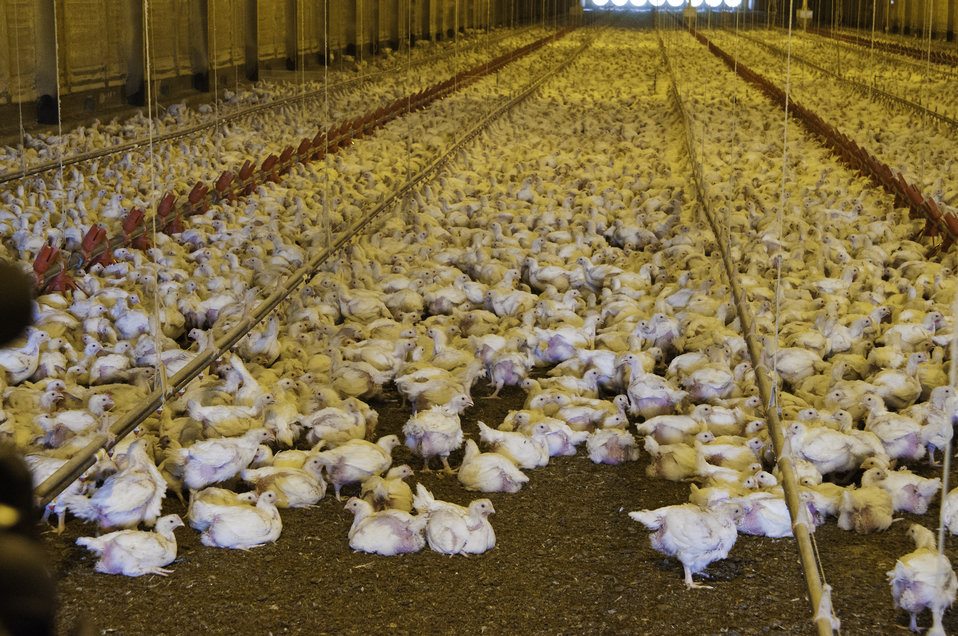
Broiler chickens are raised in a chicken house on the Bobby Morgan chicken Farm in Luling, TX on Aug. 23, 2013.